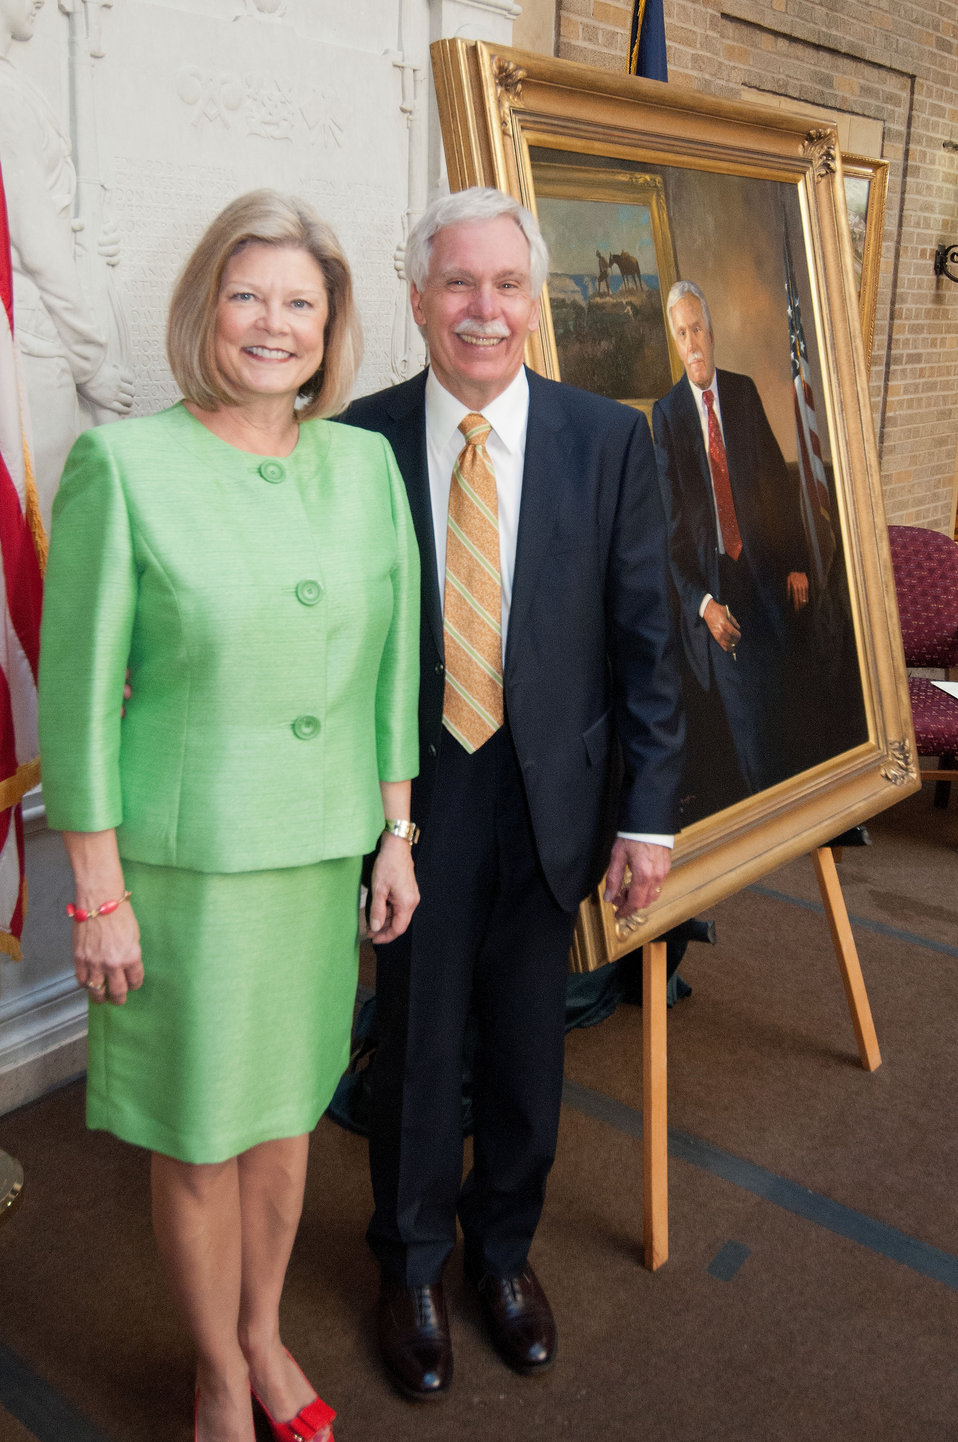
Former Agriculture Secretary Ed Schafer and his wife Nancy pose by his portrait after the unveiling at the United States Department of Agriculture in Washington, D.C., on Friday, April 27, 2012.